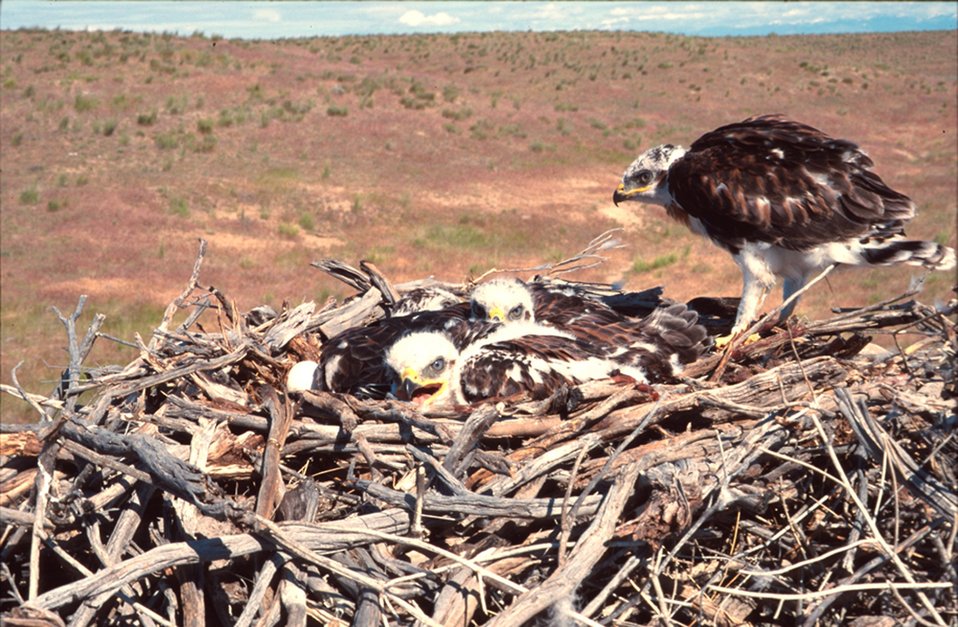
Juvenile and adult Ferruginous Hawks Owyhee Field Office LSRD Lower Snake River District